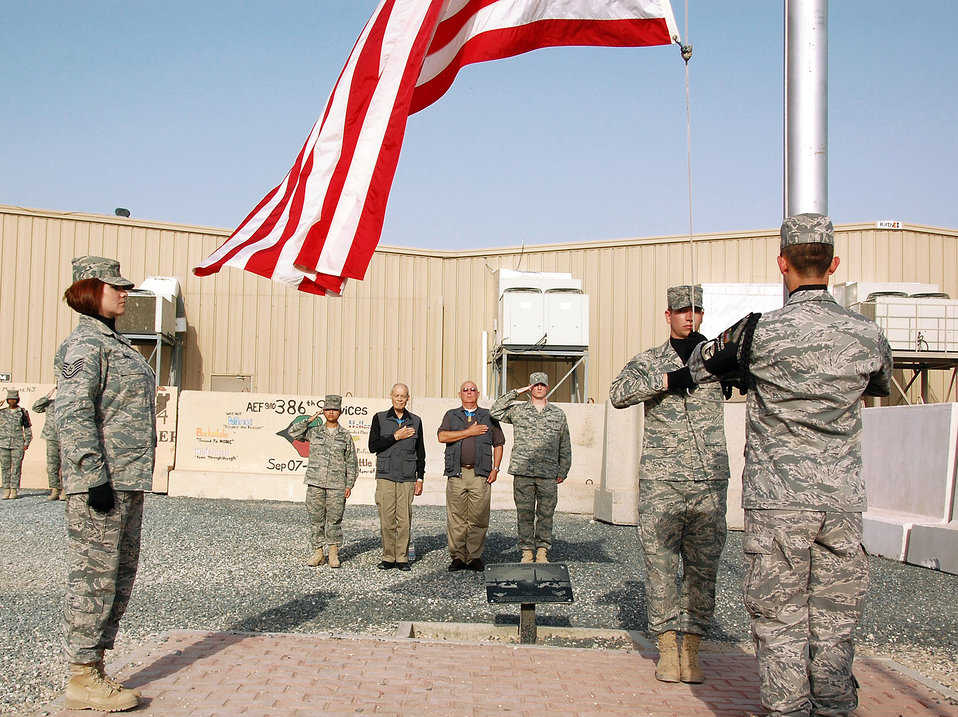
Medal of Honor recipients visit Airmen in Southwest Asia

Medal of Honor recipients retired Army Col. Robert Howard and retired Army Command Sgt. Maj. Gary Littrell watch as members of the 386th Air Expeditionary Wing honor guard conduct a retreat ceremony April 10 at an air base in Southwest Asia. Colonel Howard and Sergeant Major Littrell visited with members of the 386th AEW during a Medal of Honor Society tour of the U.S. Air Forces Central area of responsibility, speaking to Airmen on the importance of what they do and thanking them for their service.